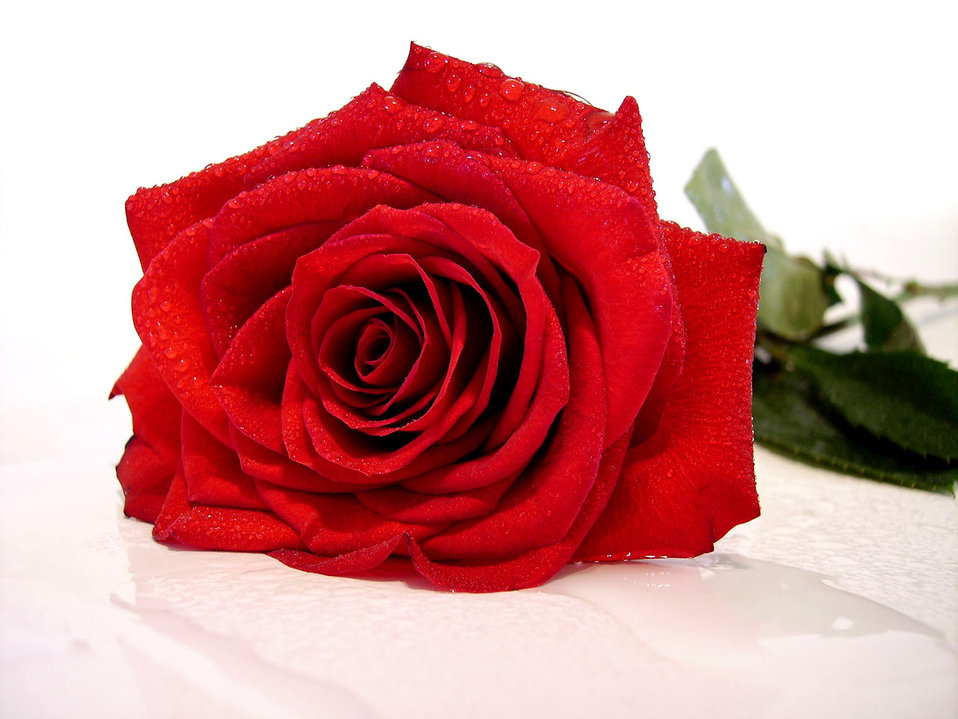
Red rose.